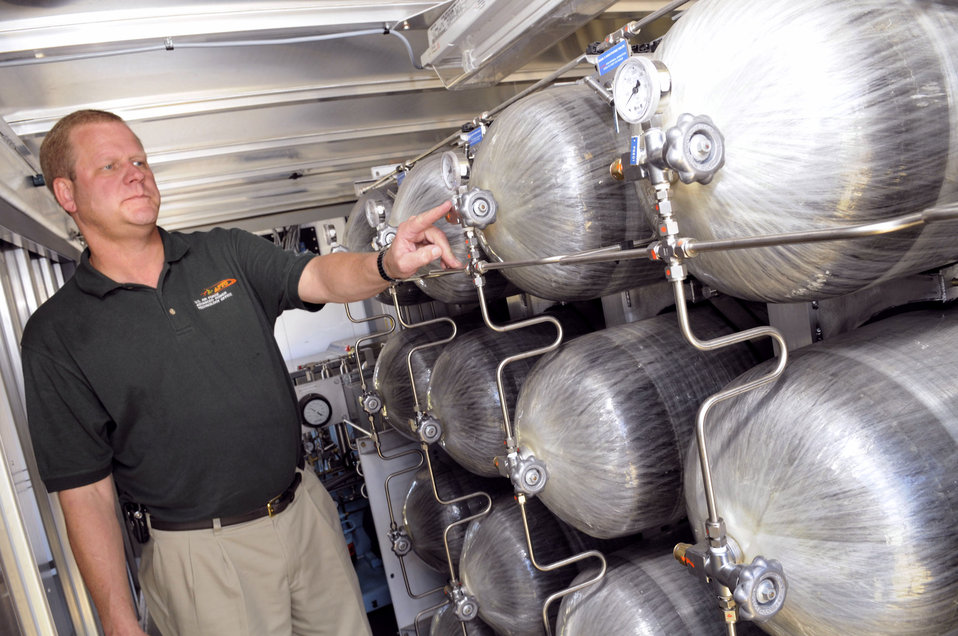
Air Force officials look at hydrogen as potential fuel source

Scott Slyfield examines hydrogen storage tanks inside the HyHauler May 21 at Robins Air Force Base, Ga. Air Force officials continue initiatives to redefine the Air Force's energy culture and are studying hydrogen-power. Mr. Slyfield is a Advanced Power Technology Office program manager.